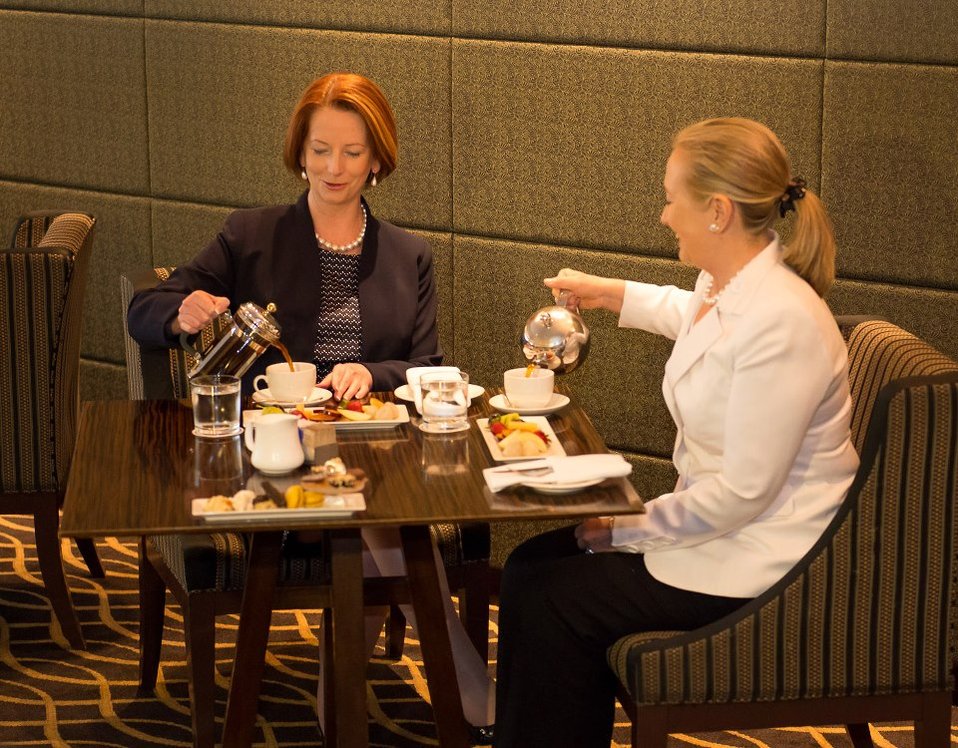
Secretary Clinton Meets With Australian Prime Minister Gillard

U.S. Secretary of State Hillary Rodham Clinton meets with Australian Prime Minister Julia Gillard in Perth, Australia, November 13, 2012. [U.S. Embassy in Canberra, Australia photo by Travis Longmore/ Public Domain]